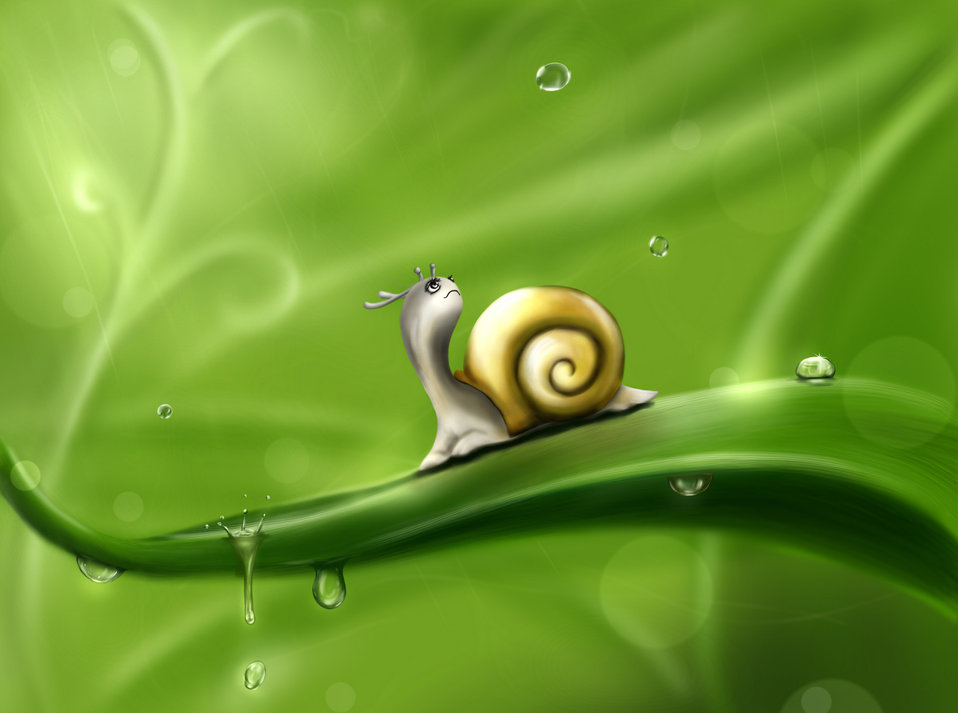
Under the rain

Fairy tale illustration. i miss summer..